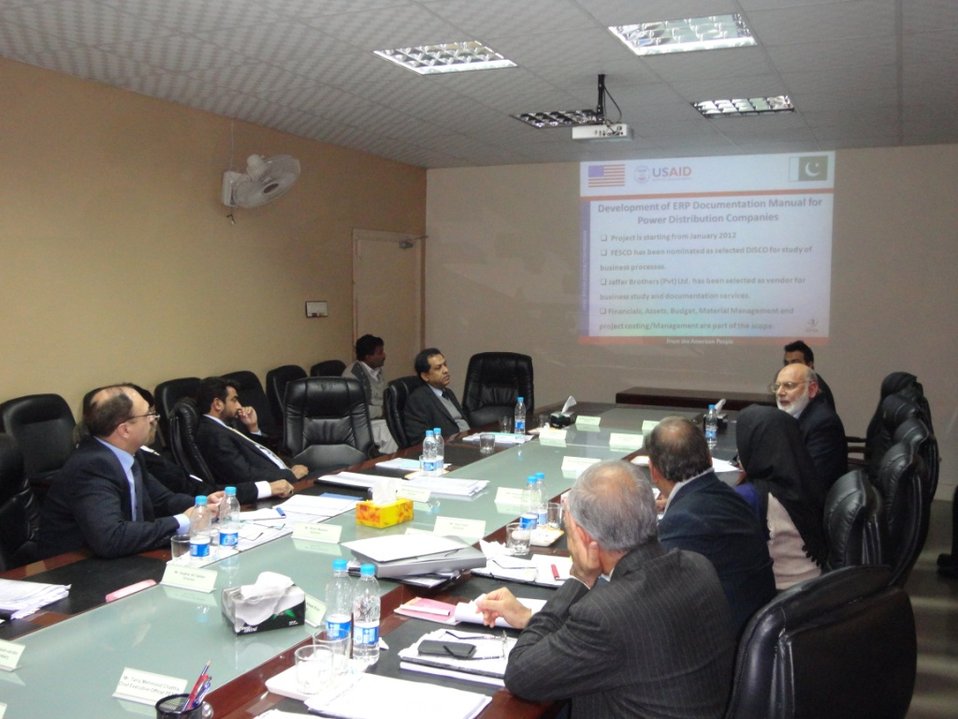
02 Jan - ERP Documentation and Technical Assistance to FESCO

.
The ERP intervention was initiated at FESCO on January 2, 20 12 to help the DISCO utilize its resources with maximum efficiency. In this regard the first task of the intervention, “Initial Review of the Business Processes” was completed on January 11. The second task, “Final Review of the Business Processes' is expected to be completed by mid-February.